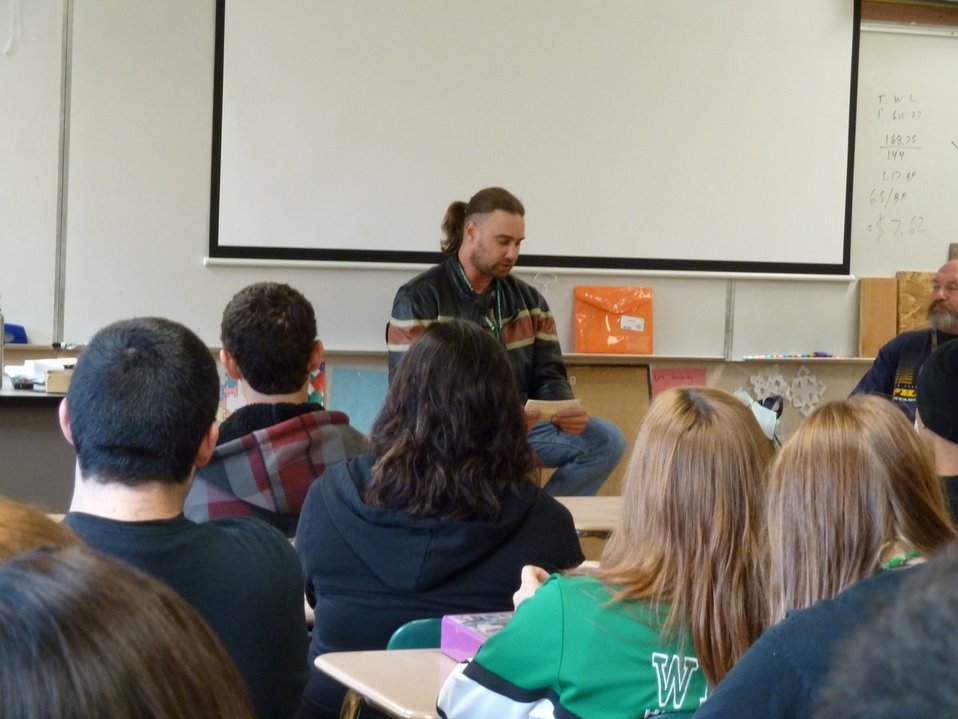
Siskiyou County, CA Drug Facts Week Photos

Leon was invited to Siskiyou County School’s to share his story about drugs and educate children about the dangers of drug abuse. Leon crashed his pickup truck while driving drunk 6 years ago. The crash left him with physical ailments.